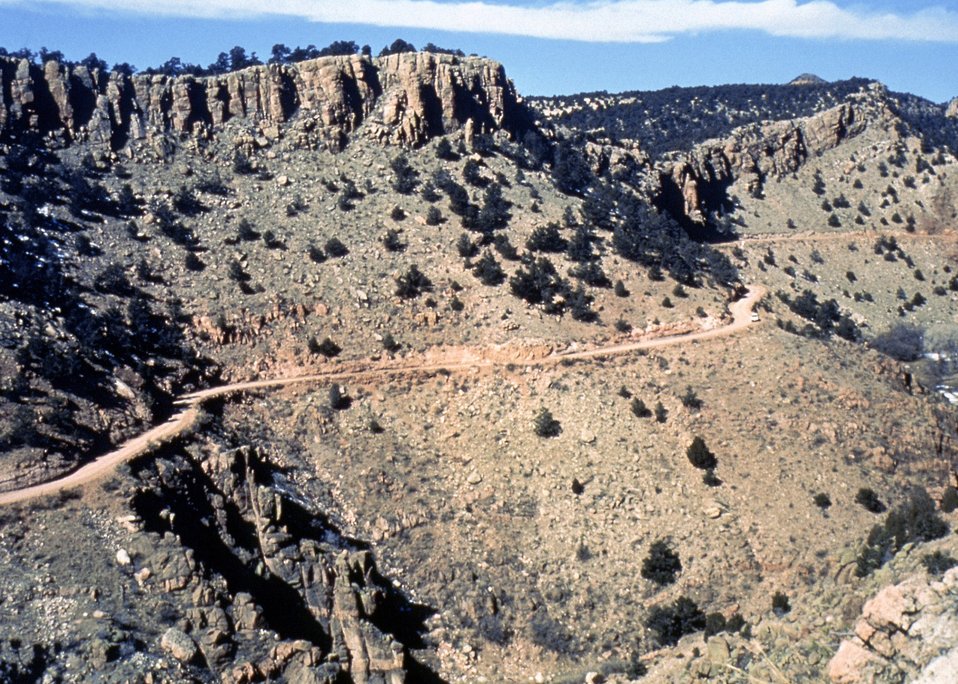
Driving Alone Gold Belt Byeway